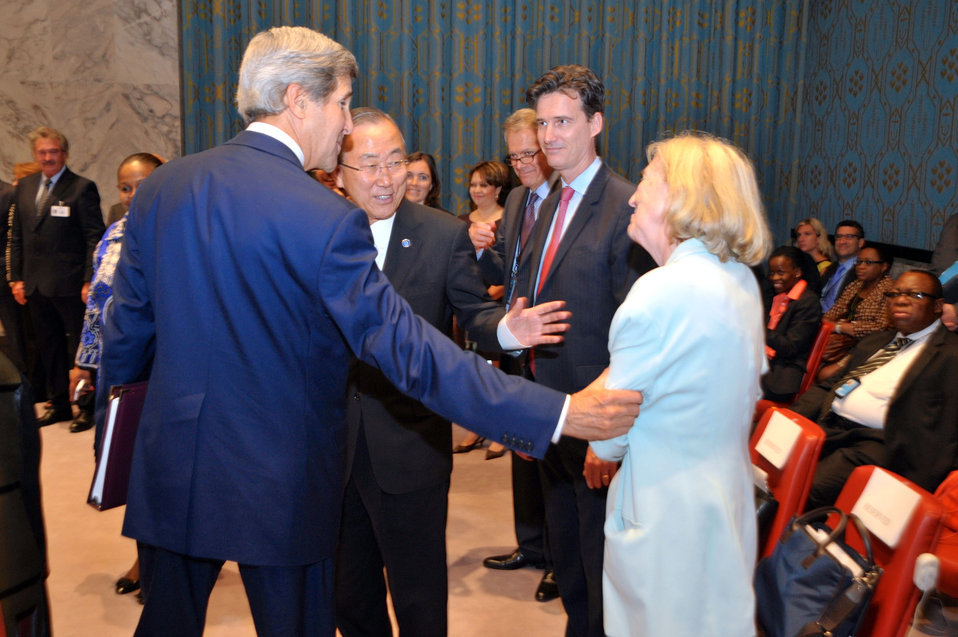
Secretary Kerry Greets His Sister Peggy

U.S. Secretary of State John Kerry, joined by United Nations Secretary General Ban Ki-moon, greets his sister Peggy - a UN employee - before kicking off a discussion of Africa's Great Lakes region by the UN Security Council in New York City on July 25, 2013.